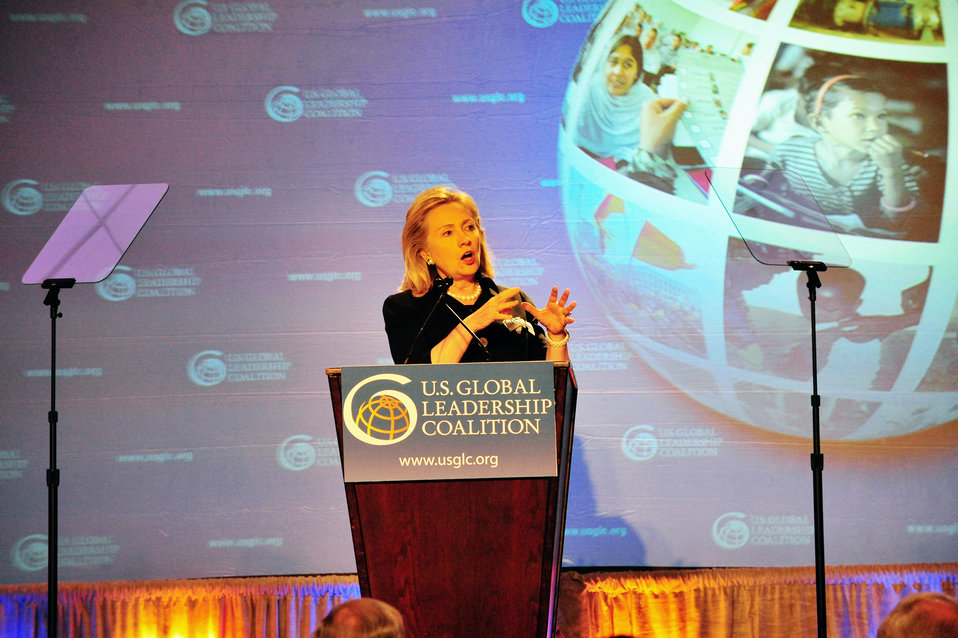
Secretary Clinton Delivers Remarks to the 2011 U.S. Global Leadership Coalition Conference

U.S. Secretary of State Hillary Rodham Clinton delivers remarks to the 2011 U.S. Global Leadership Coalition (USGLC) Conference, at the Grant Hyatt Hotel in Washington, D.C., on July 12, 2011.